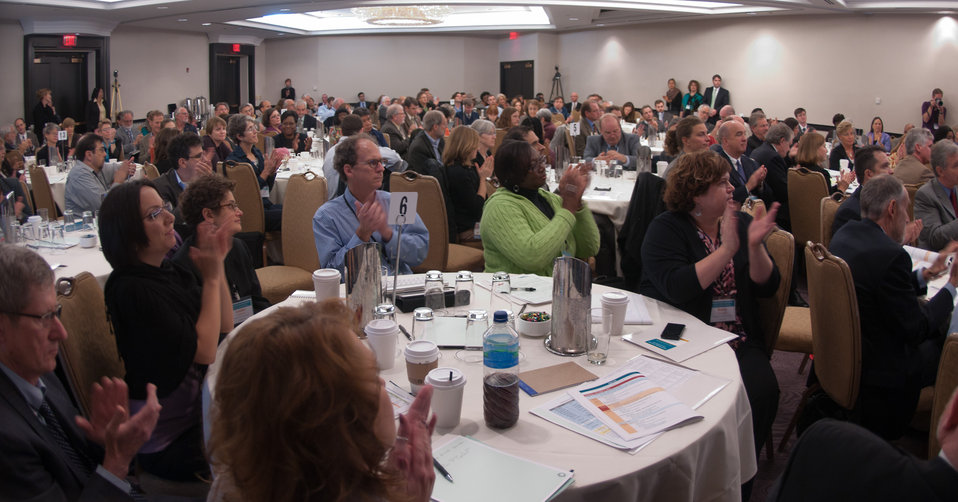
Participants applaud Agriculture Secretary Tom Vilsack's keynote address to them, at the Rural Wealth Creation and Livelihoods national conference for practitioners, researchers and policymakers, held at the Dupont Hotel, Washington DC, on Monday October 3, 2011. USDA partnered with the Ford Foundation to sponsor the conference.